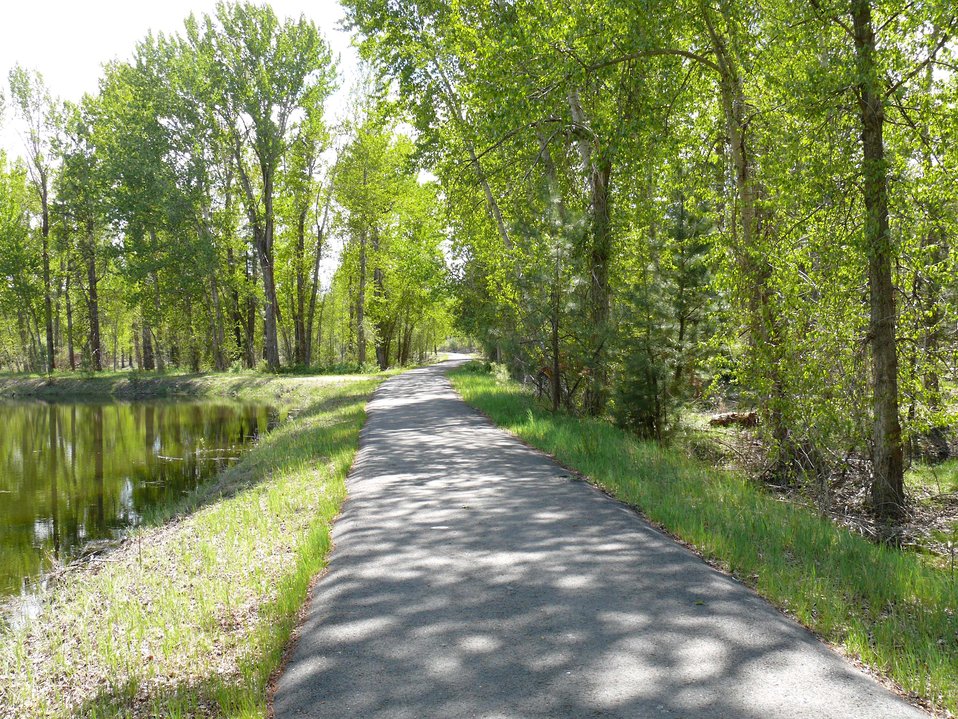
Wildlife Viewing Area Trail, Lee Metcalf Refuge

First half-mile of this trail in Montana is paved and wheelchair-accessible.